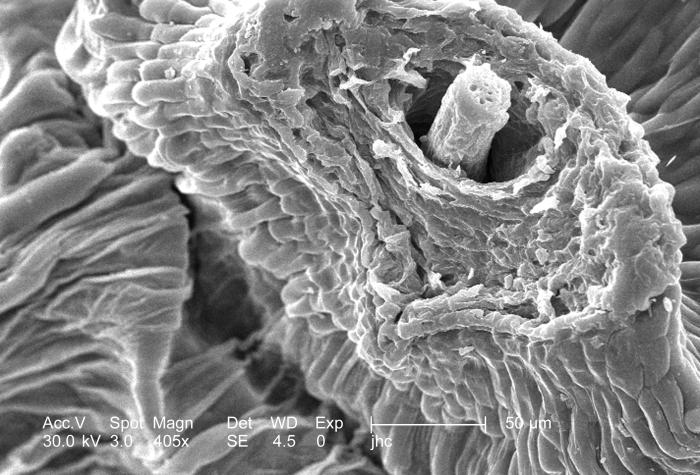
Under a moderate magnification of 405x, this 2006 scanning electron micrograph (SEM) depicted details of the morphologic surface characteristics of a "dandelion clock", from a Common Dandelion, Taraxacum officinale plant. The "clock" is the filamentous "puffball" of seeds arranged so as to be easily dispersed by the wind, or the breath of a curious child.In this field of view the remnants of a seed attachment is visible as a small nub protruding from a small papule. It is from these nub-like points that the "parachute"-equipped seeds detach, and are blown away, sometime over a distance of miles. Note that this is the second in a series of PHIL images, 8791-8796, in which the magnification is increased, thereby, providing greater and greater morphologic detail of the point of the developing seed attachment.